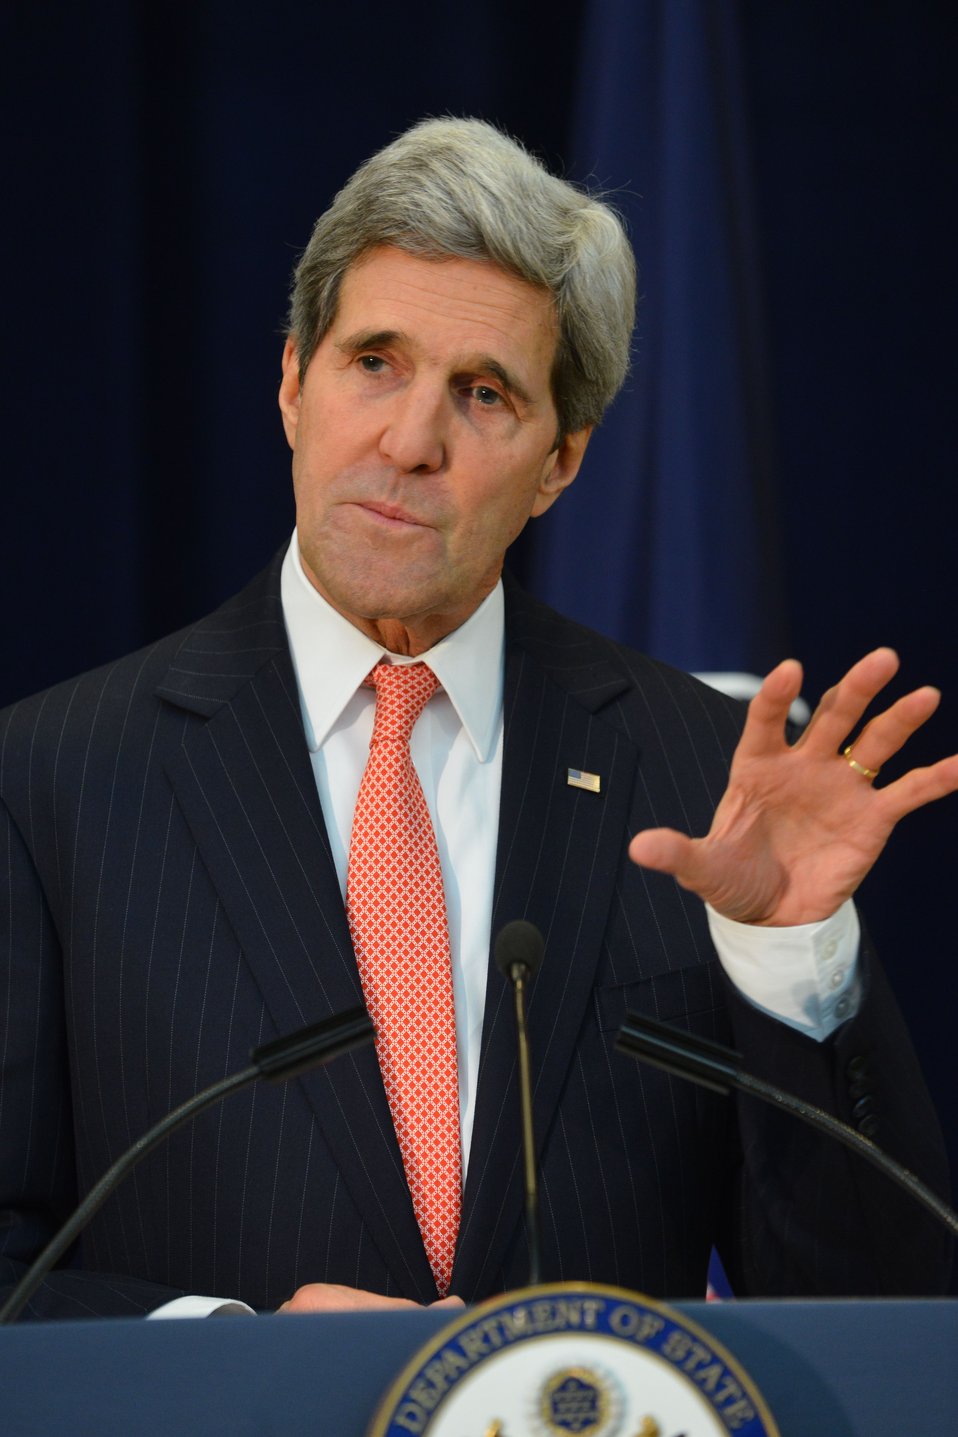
Secretary Kerry Delivers Remarks at the Annual Department of State Retirement Ceremony

U.S. Secretary of State John Kerry delivers remarks at the annual Department of State Retirement Ceremony at the U.S. Department of State in Washington, D.C., on January 28, 2014.